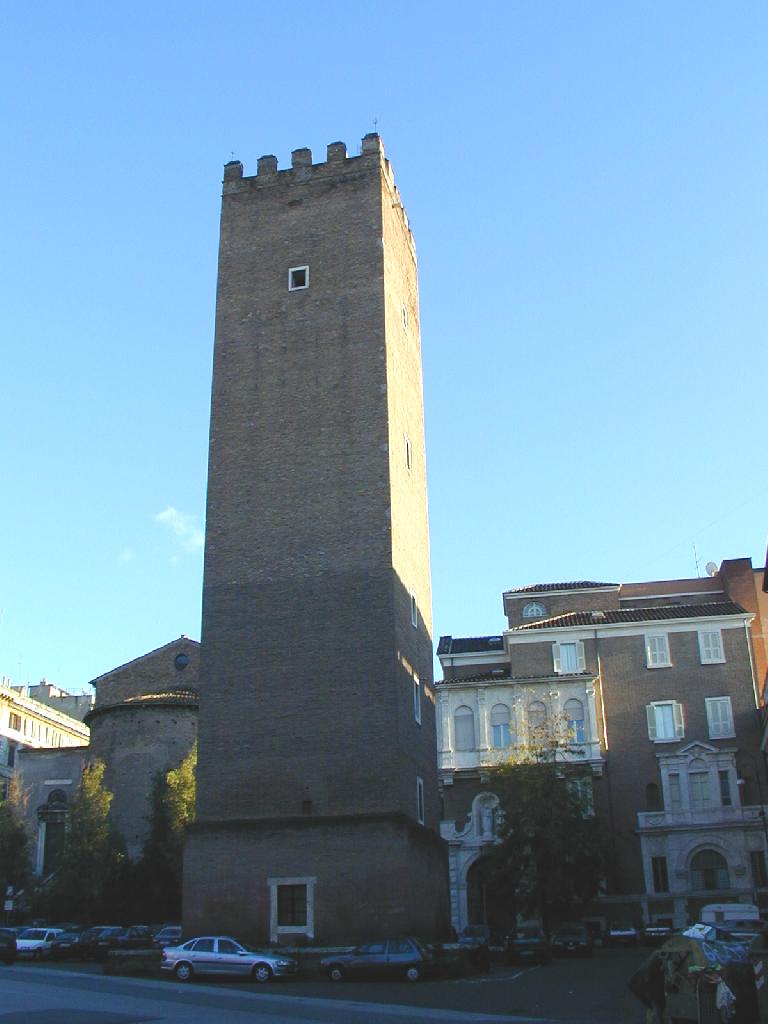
001126 1 torre capocci 1